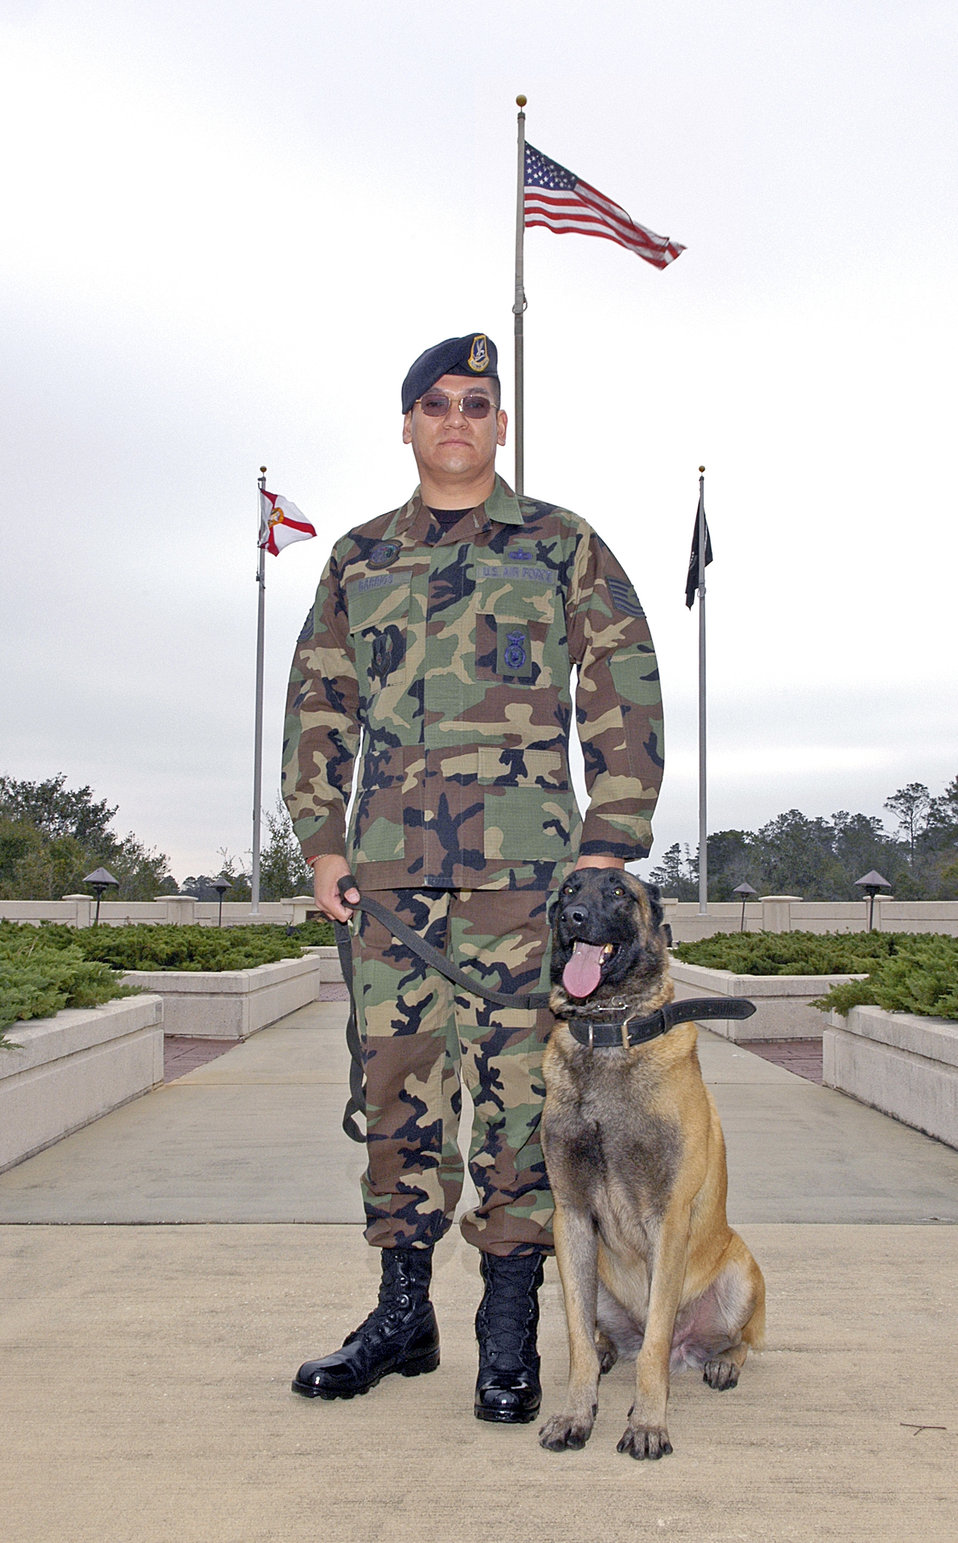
Re-enlistment marks milestone for accident victim

EGLIN AIR FORCE BASE, Fla. -- Tech. Sgt. Hector Barrios stands with his dog during his re-enlistment ceremony here recently. After a two-ton concrete barrier fell on his leg and foot while deployed supporting Operation Iraqi Freedom in July 2003, Sergeant Barrios faced an 18-month struggle of amputation, reconstruction and infections before he gained medical clearance to remain in the Air Force. Sergeant Barrios is a dog handler with the 96th Security Forces Squadron here.